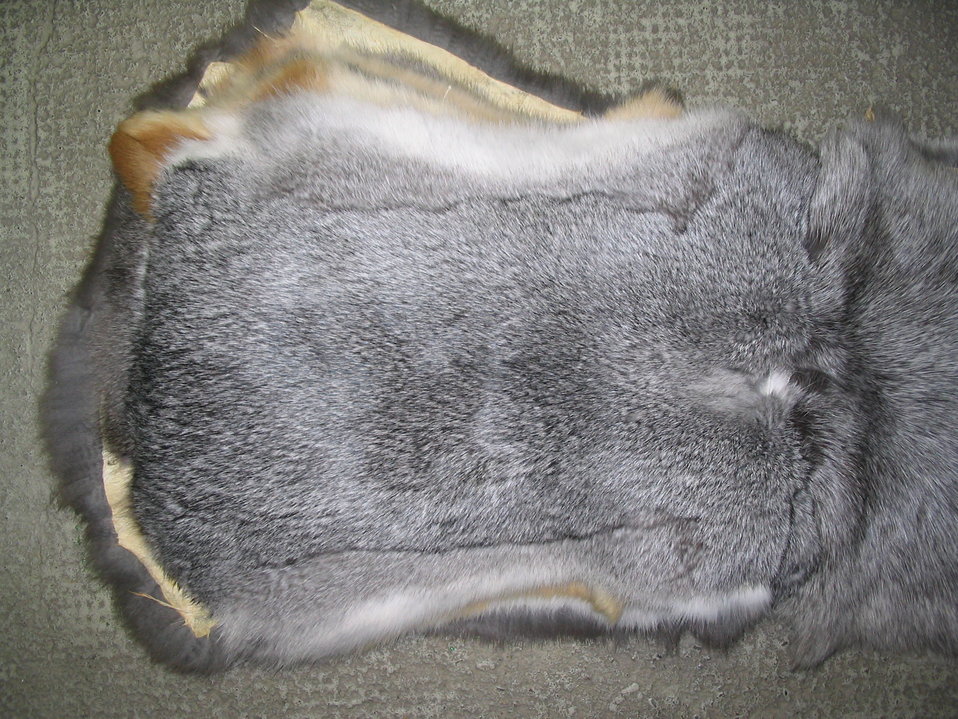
Deutsch: Hauskaninchenfelle „Chinchilla regulär“.
Gesehen beim Rauchwarenhändler Wolfgang Czech (geb. 1931), in 2. Generation Spezialist für Kaninfelle, Frankfurt/Main, Niddastraße.
Domestic rabbit fur skins, chinchilla regular